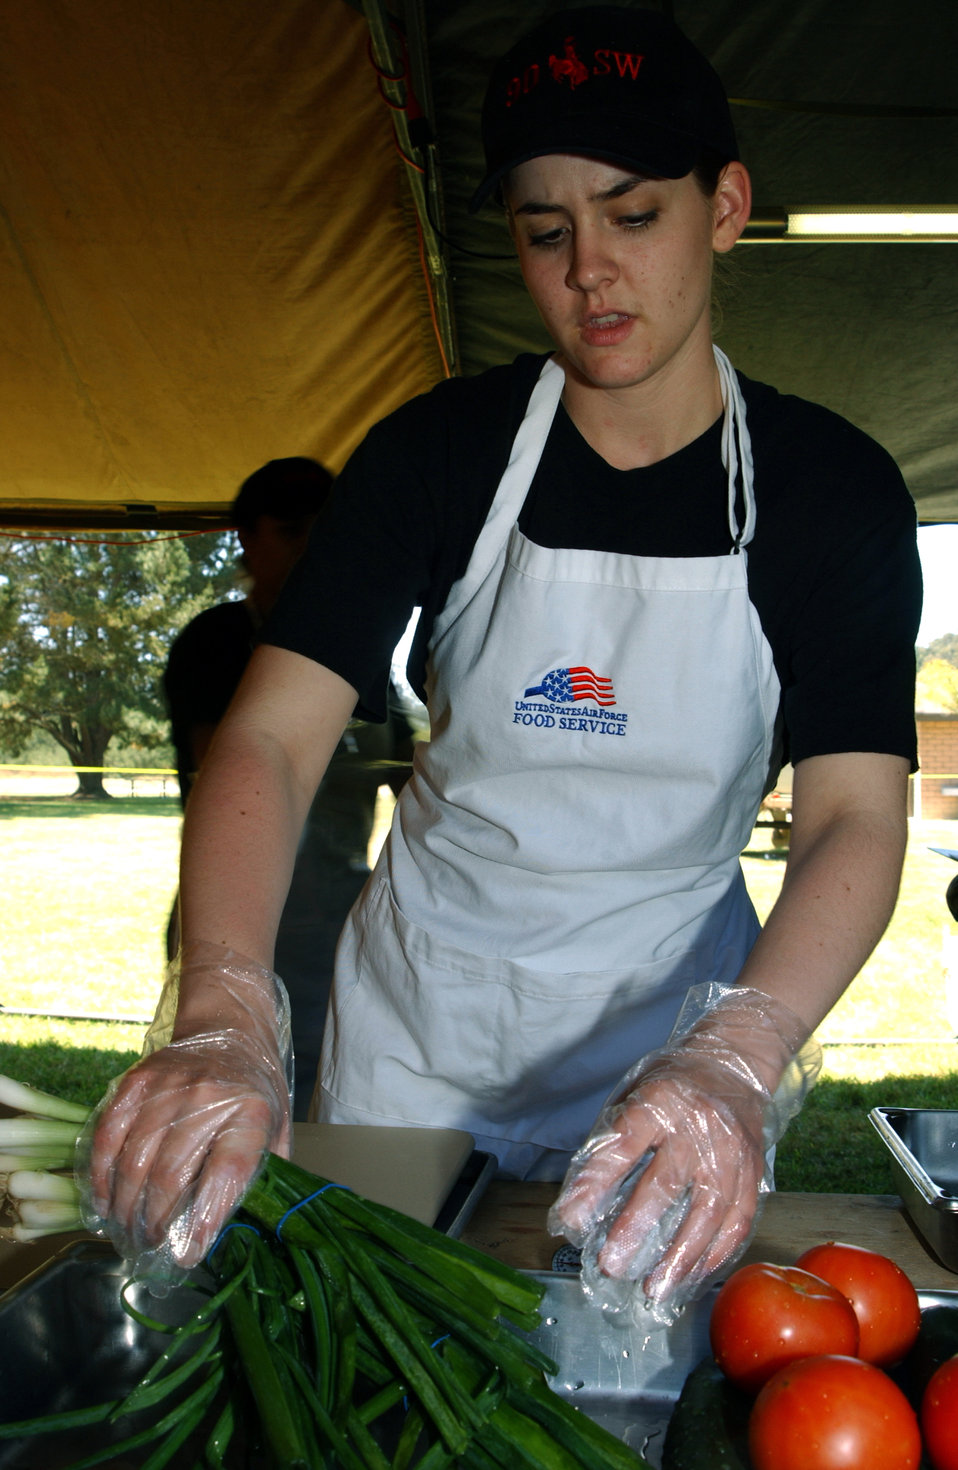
Starting the 'Challenge'

VANDENBERG AIR FORCE BASE, Calif. -- Airman 1st Class Holly Hood prepares vegetables for the chef cooking competition at Guardian Challenge here May 4. She is assigned to the 90th Space Wing at F.E. Warren Air Force Base, Wyo. Guardian Challenge, the world's premier space and missile competition, is a four-day event held annually. It tests the wartime readiness of Air Force Space Command's Airmen in spacelift, ICBM operations, communications, maintenance, helicopter operations, security forces and chef food preparation.